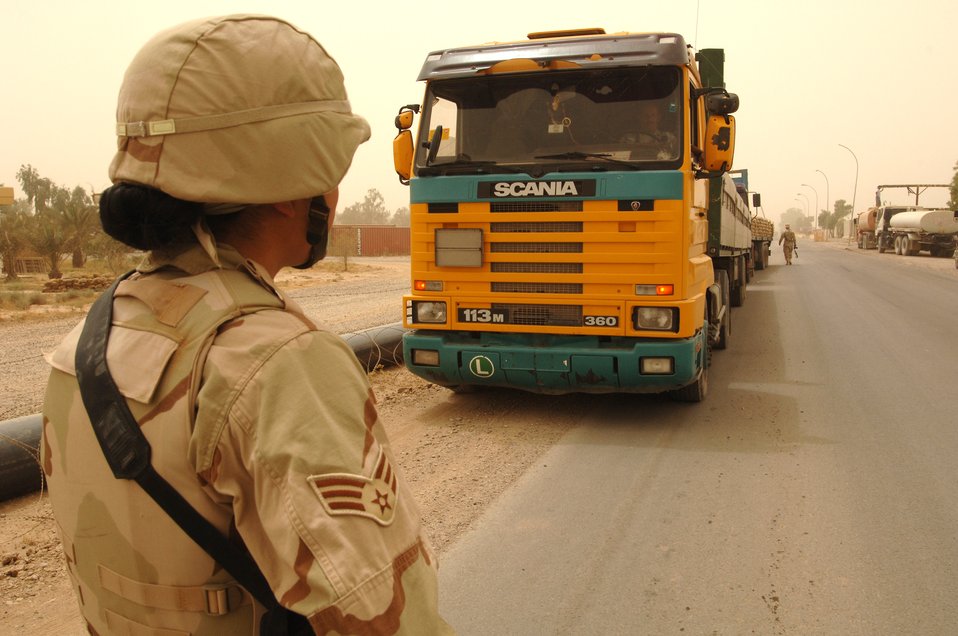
Escorts provide protection for fellow servicemembers

BALAD AIR BASE, Iraq -- Senior Airman Othelia Richards observes a third-country national truck convoy delivering concrete mix here. Third country nationals and local nationals make up a large percentage of the workforce for construction projects and day-to-day jobs around the base. An escort's job is to monitor workers and provide security. For many escorts, the job requires long days in the scorching sun with weapon in hand and a careful eye watching for suspicious activities. Airman Richards is assigned to the 332nd Expeditionary Civil Engineer Squadron.